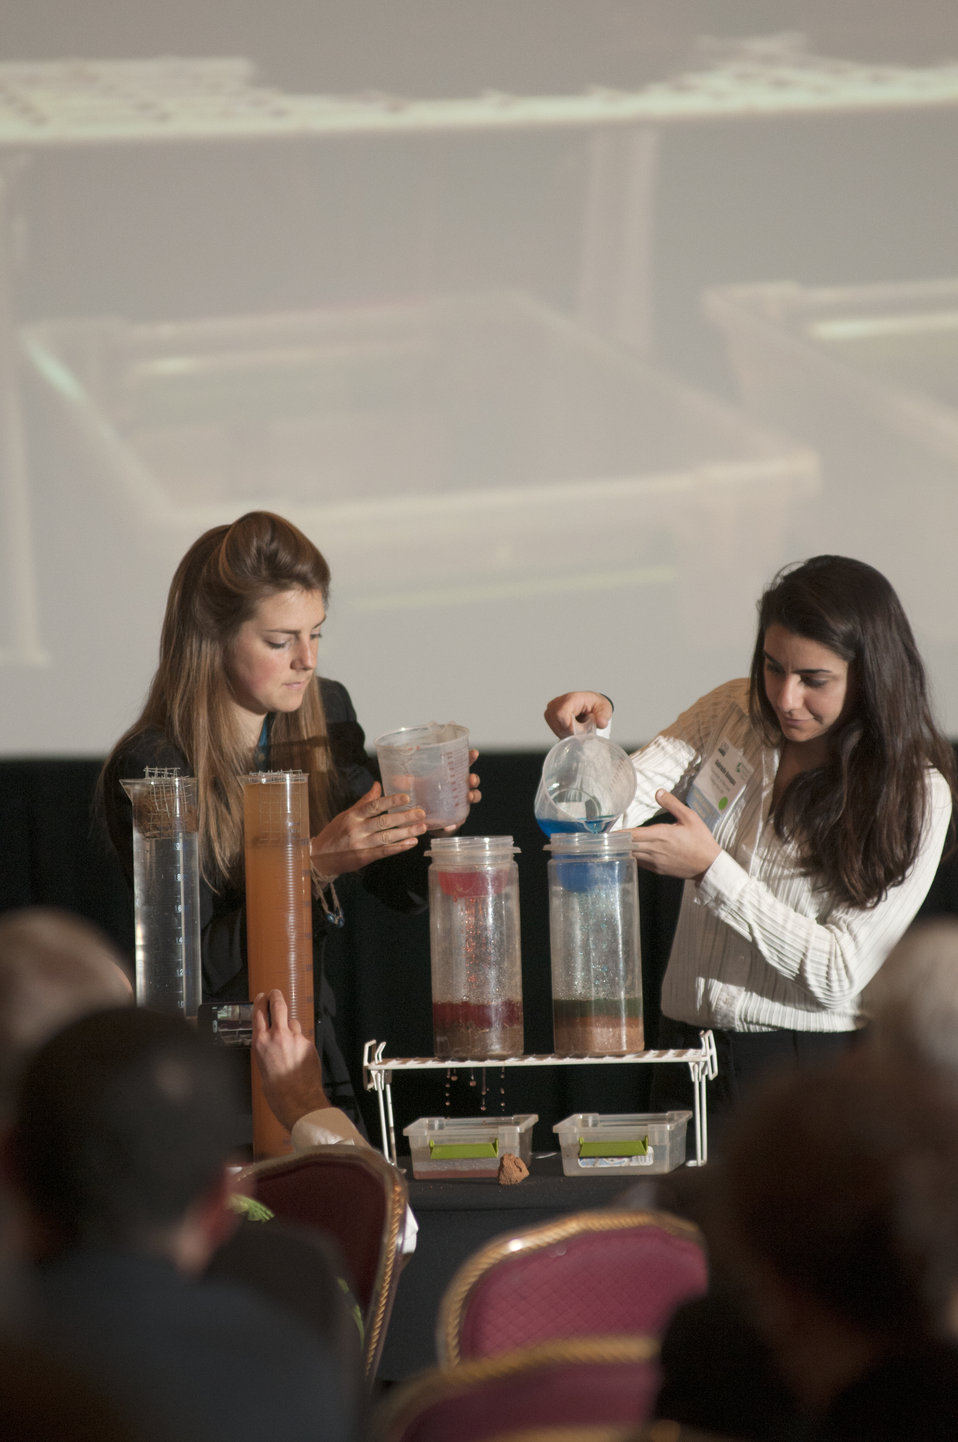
The U.S. Department of Agriculture (USDA) 2013 Agricultural Outlook Forum was held at the Crystal Gateway Marriott Hotel in Arlington, VA on Friday, Feb. 22, 2013. The breakout session on Reducing Risks by Improving Soil Health examined the indicators of soil health, to reduce chemical inputs and apply the right techniques for sustainable production and other benefits. Soil health is defined as the capacity of the soil to function as a living ecosystem that sustains plant, animal, and human health with limited human intervention. In a test to simulate rain, the untilled soil has pores that allow the red colored water to pass through the surface. The tilled soil blocks the blue colored water from passing through to the pan below. In the graduated containers on the left, the left container has a ball of untilled soil, which holds its structure, while the tilled soil ball of the same size quickly lost it's integrity and mixed with the water.